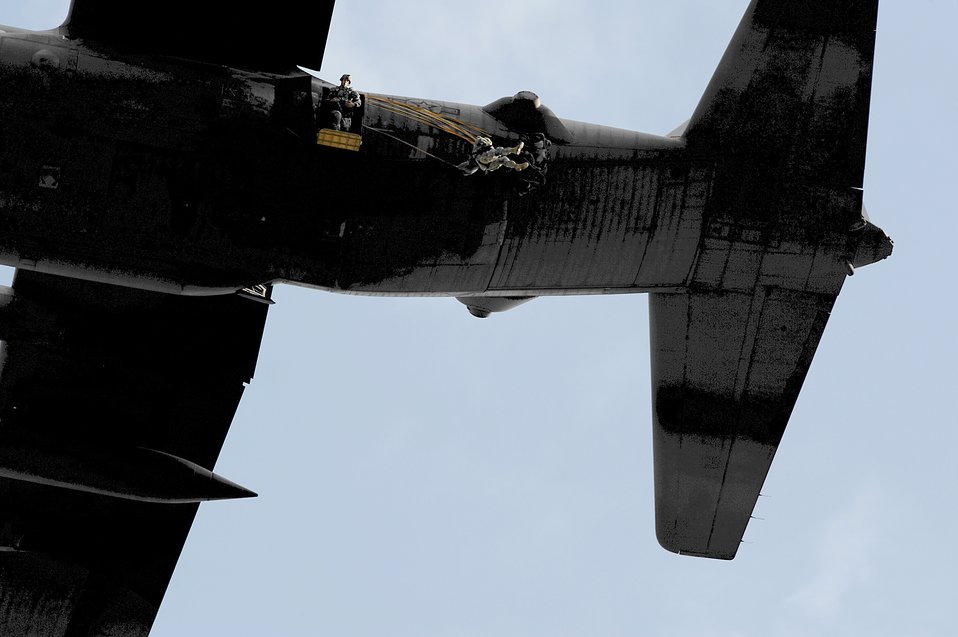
Joint Forces Entry Exercise

Soldiers jump from the troop door of a C-130 Hercules over a drop zone during airborne operations Sept. 12, 2010, at Fort Bragg, N.C. Soldiers are assigned to the 82nd Airborne Division at Fort Bragg.